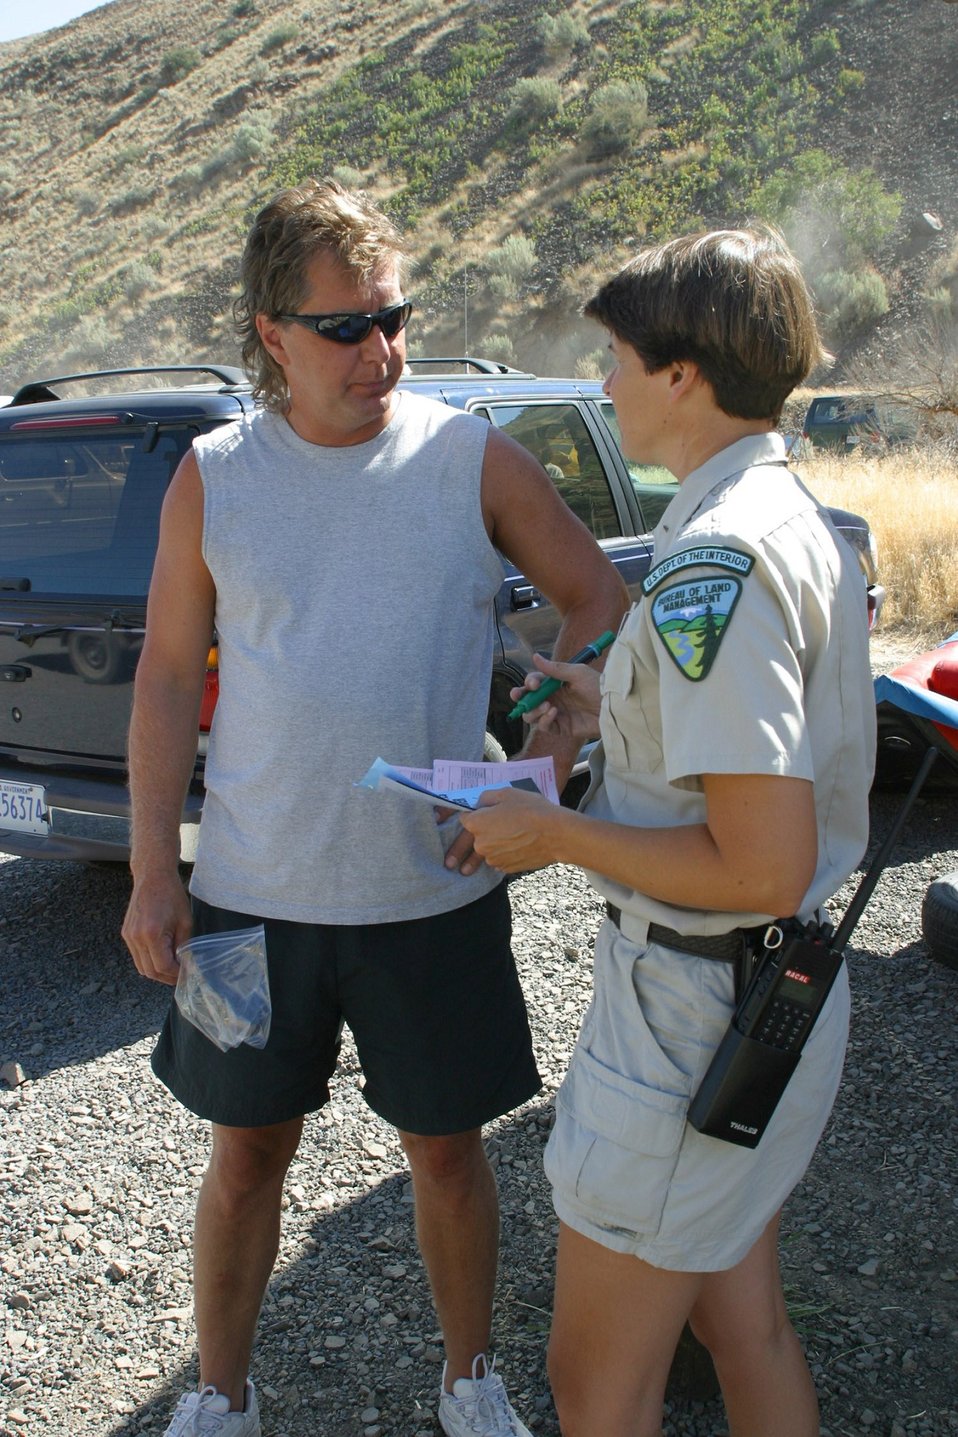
BLM River Rangers at Harphamp Flat check permits and issue boat tags while reminding users of current safety and fire regulations.